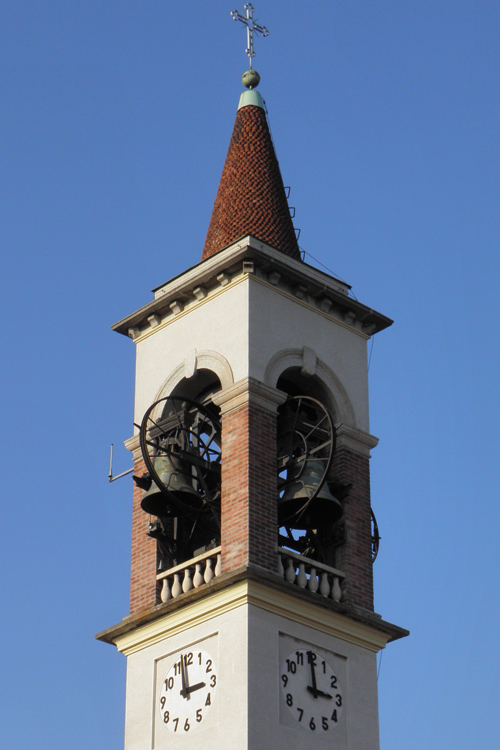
Il campanile di Robbiano, nel comune di Giussano (MB)